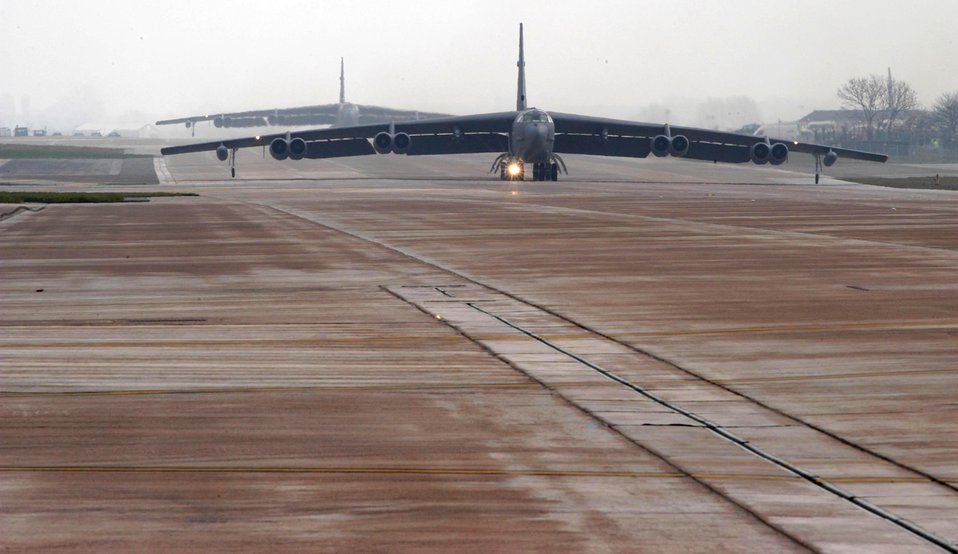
Buff taxi

OPERATION IRAQI FREEDOM -- B-52 Stratofortress bombers taxi toward takeoff for Operation Iraqi Freedom bombing missions. The B-52s are operating from a forward- deployed air base.